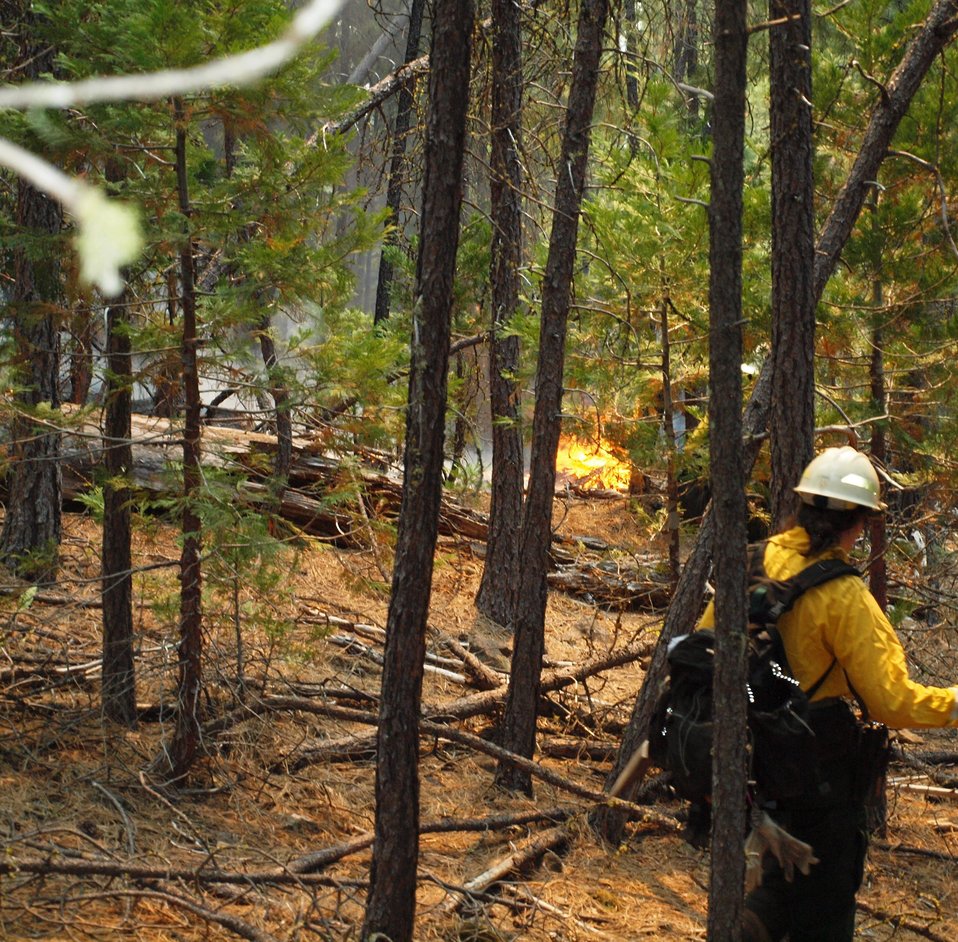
Firefighters work the fire line at the Green Ridge Fire. The Green Ridge Fire in the Deschutes National Forest near Sisters, OR began on Jul. 31, 2013 by lightning has consumed approximately 1,510 acres and is approximately 95% contained.